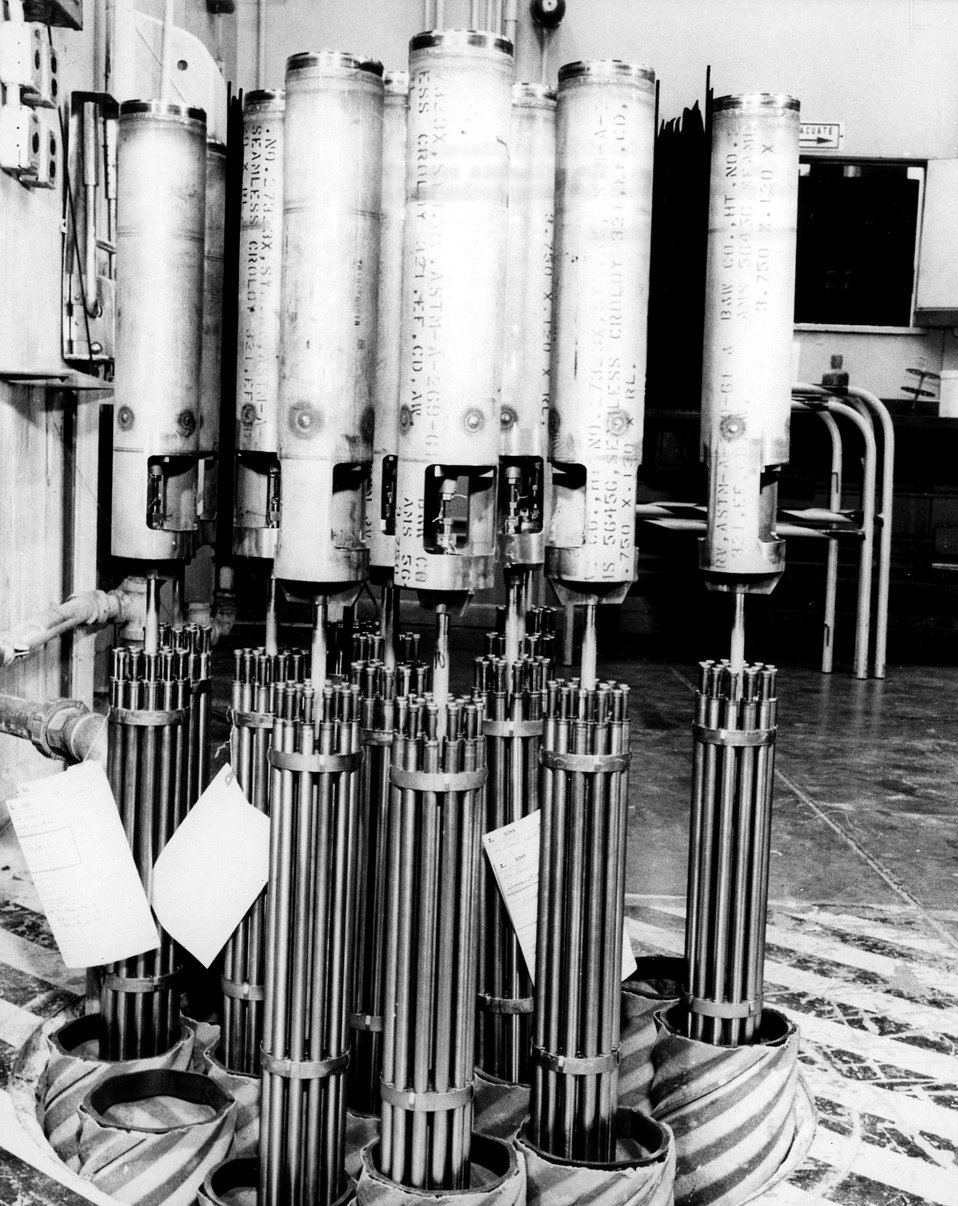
Fabrication of Uranium Carbide Fuel Elements: Completed fuel elements. c. 1964